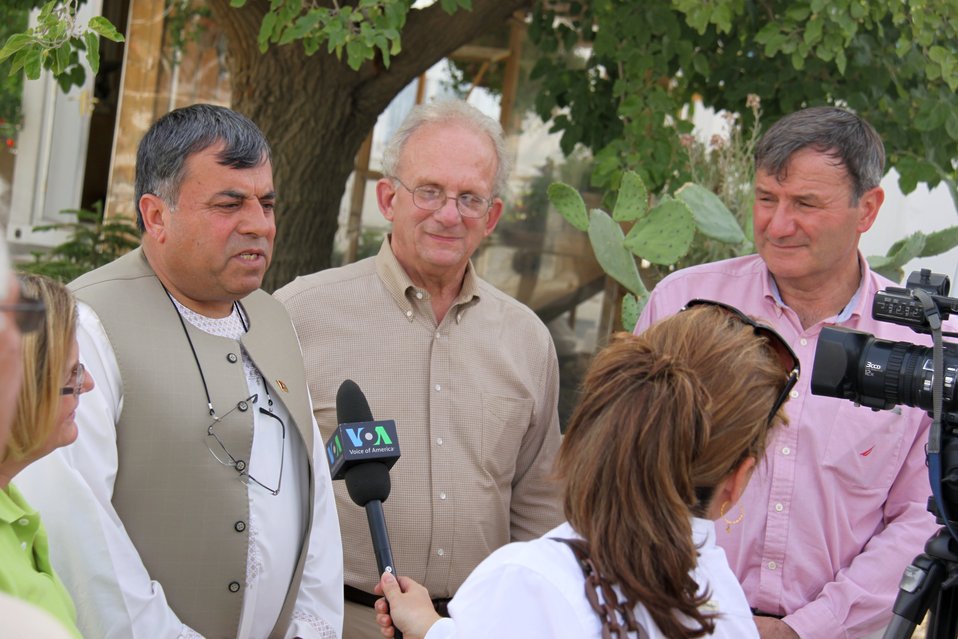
Meeting with Local Leaders in Kandahar